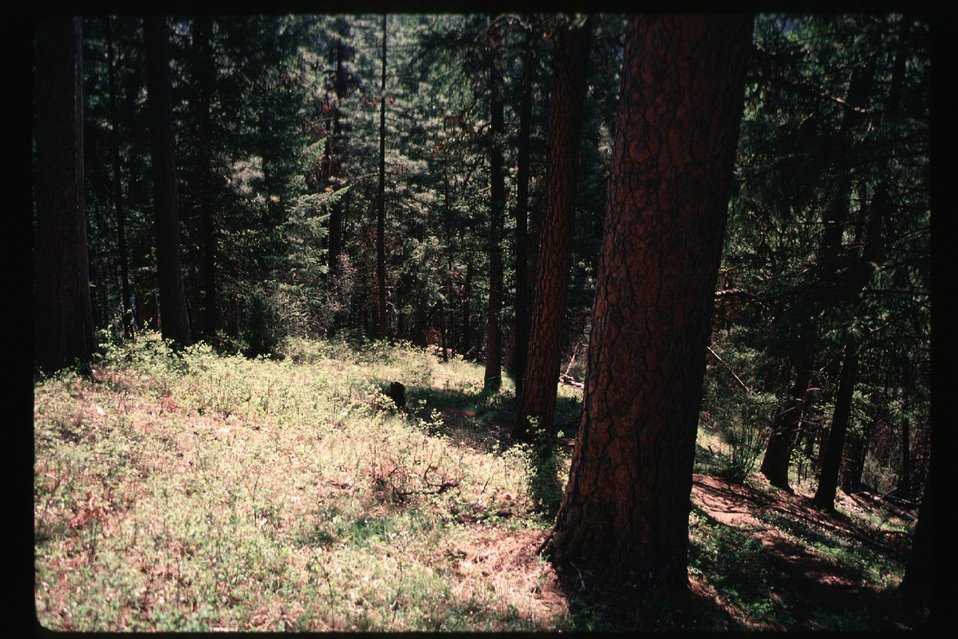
Forestry Couer d'Alene Field Office UCSC Upper Columbia-Salmon Clearwater District